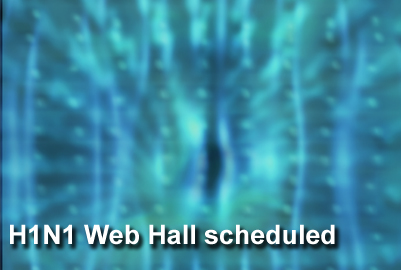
Web Hall

A Web-based town hall meeting has been scheduled for Nov. 10 by experts in the Military Health System to respond to questions about H1N1 influenza.